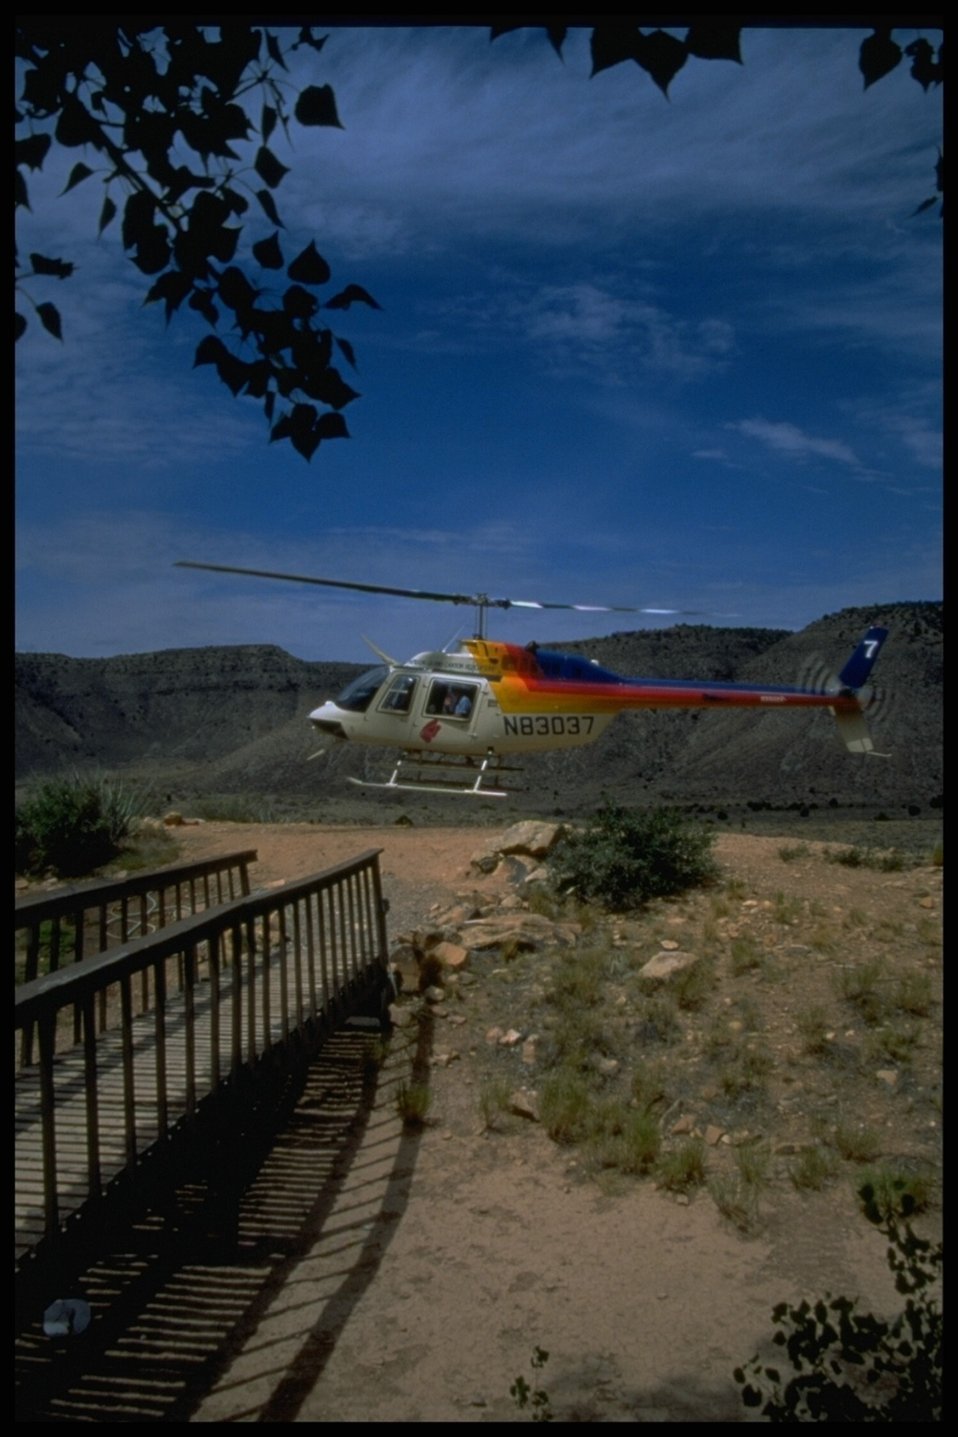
A helicopter landing in the Parashant National Monument area.